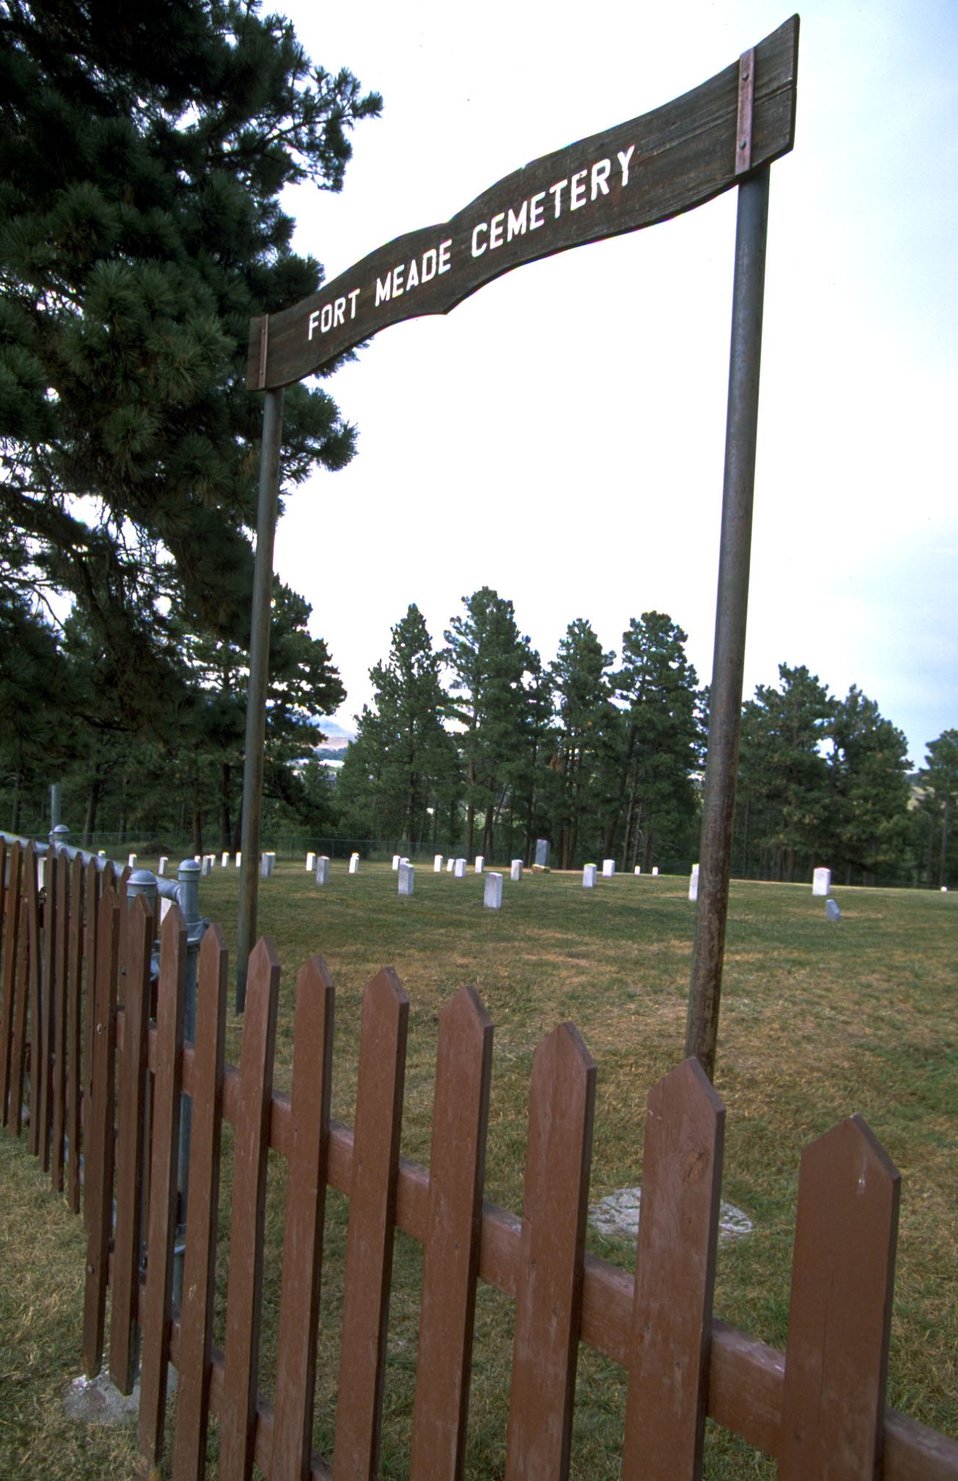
Old Post Cemetery at the south end of Fort Meade